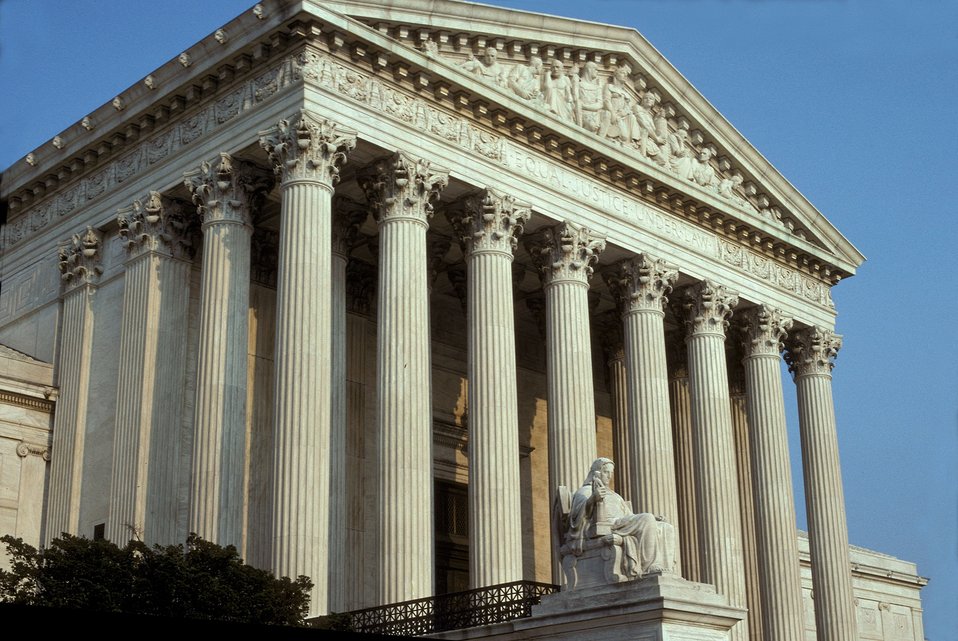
U. S. Supreme Court Buildng in Washington DC.